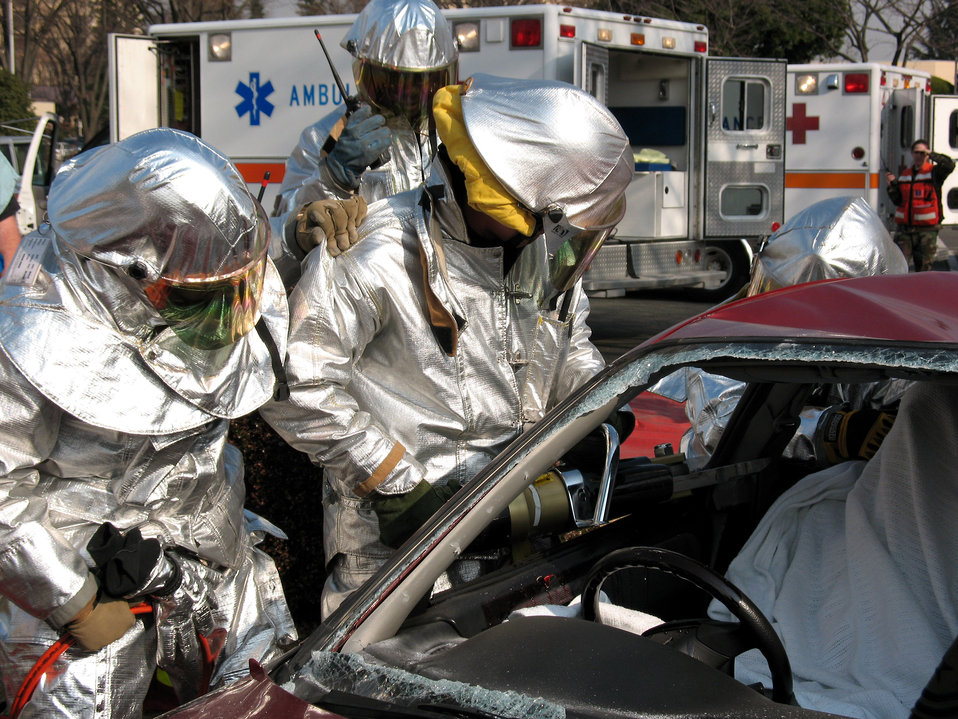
Emergency crews practice techniques in mock car crash

Firefighters take the roof off of a car involved in a mock accident using a tool commonly known as